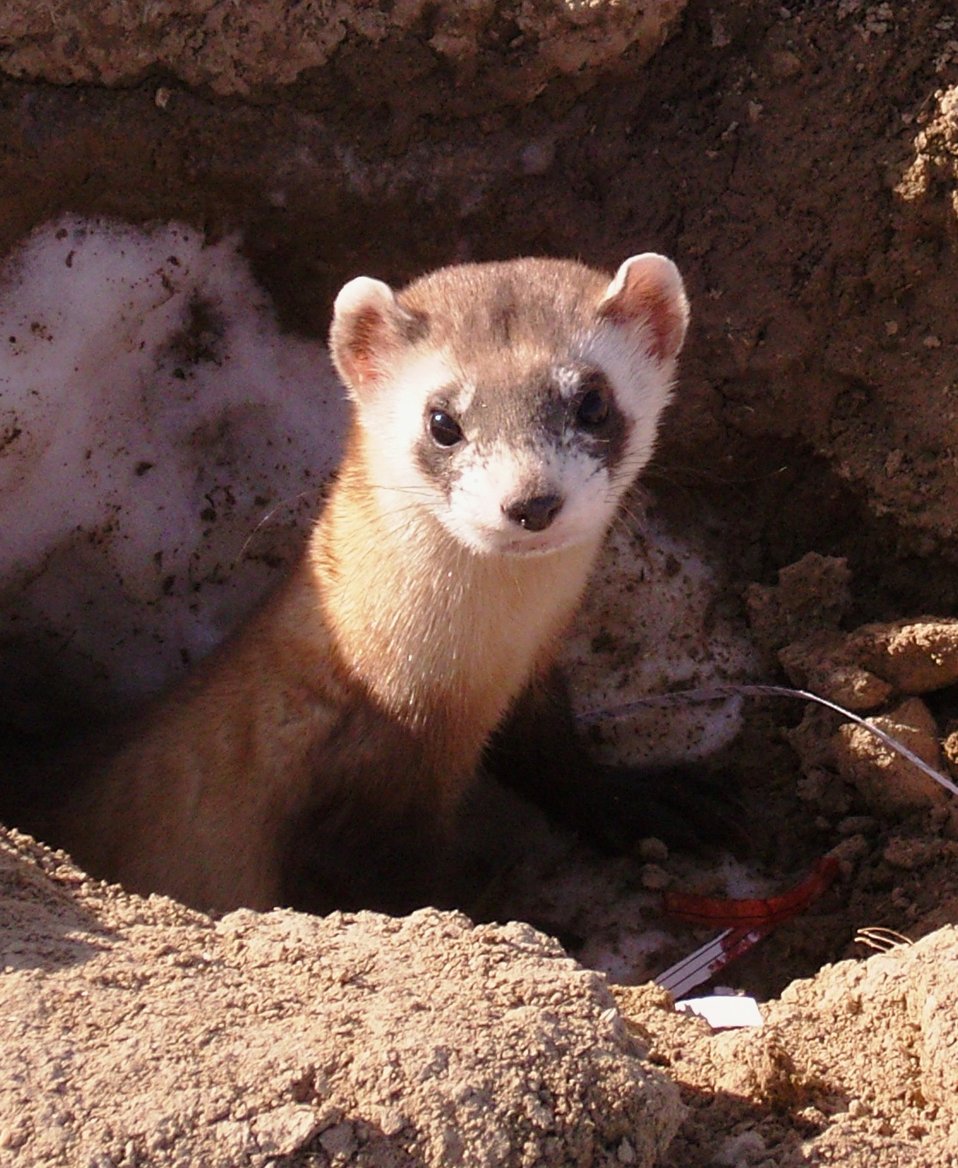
Black-footed ferret

A black-footed ferret (Mustela nigripes) pops out of a burrow. The black-footed ferret is 18 to 24 inches long, including a 5 to 6 inch tail. It weighs only one-and-a-half to two-and-a-half pounds, with males slightly larger than females. The black-footed ferret is well adapted to its prairie environment and depends on prairie dogs for food and habitat. The black-footed ferret is listed as endangered.